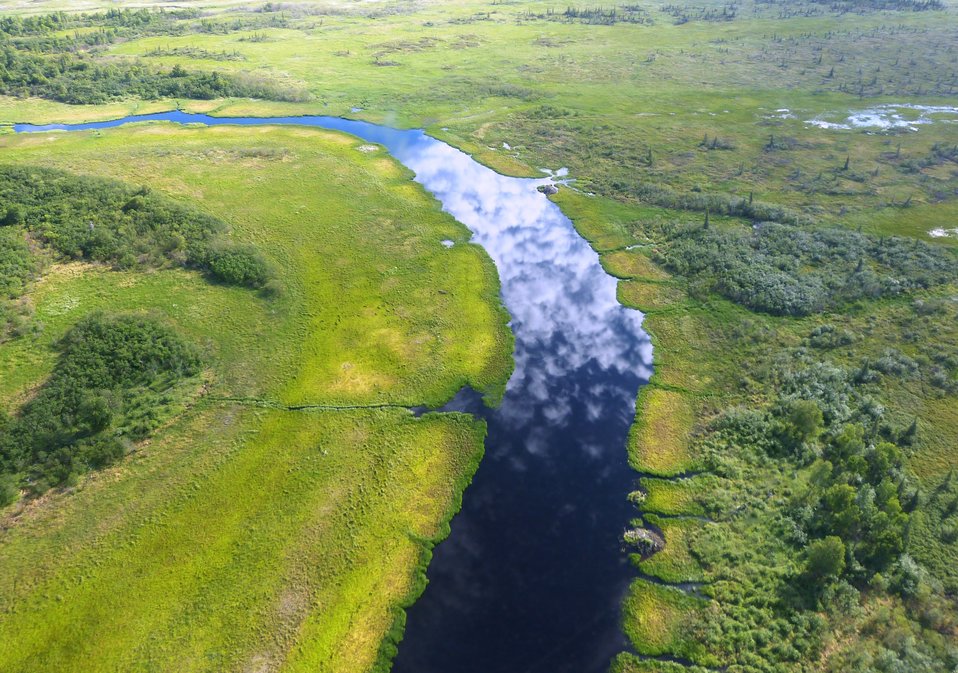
Yukon Delta NWR Wetlands

Boreal wetlands, Yukon Delta National Wildlife Refuge

Photo by: Kristine Sowl,
USFWS, Yukon Delta NWR,
July 10, 2013